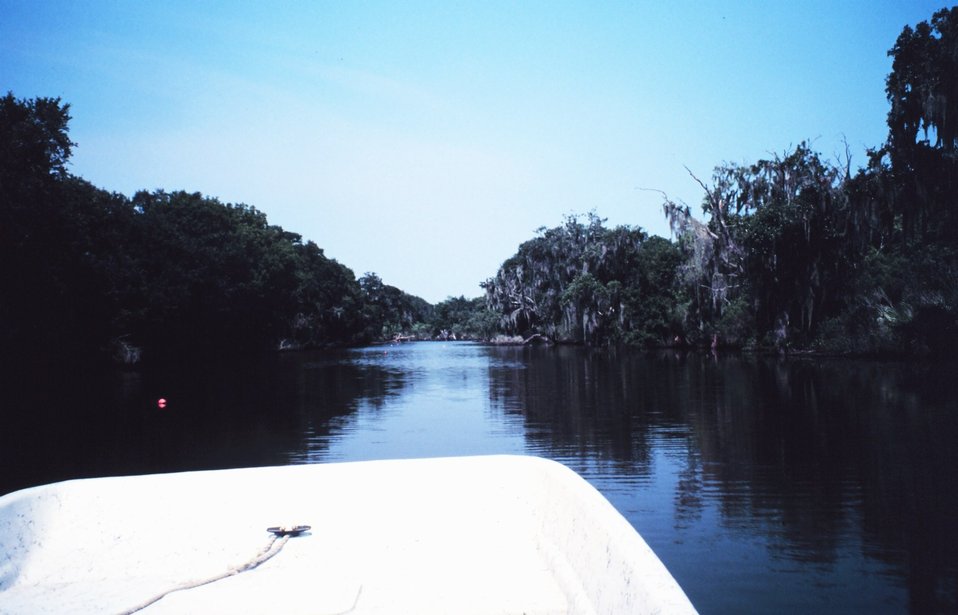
Live oak with spanish moss, a type of bromeliad related to pineapples along a canal south of New Orleans.